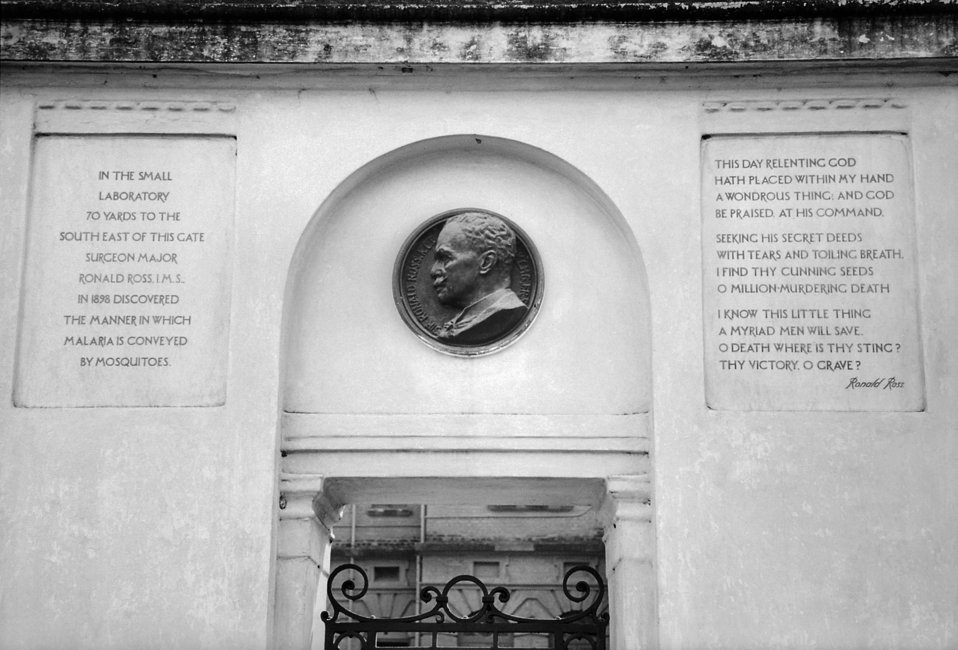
Gate to a malaria lab in Calcutta, West Bengal, India.